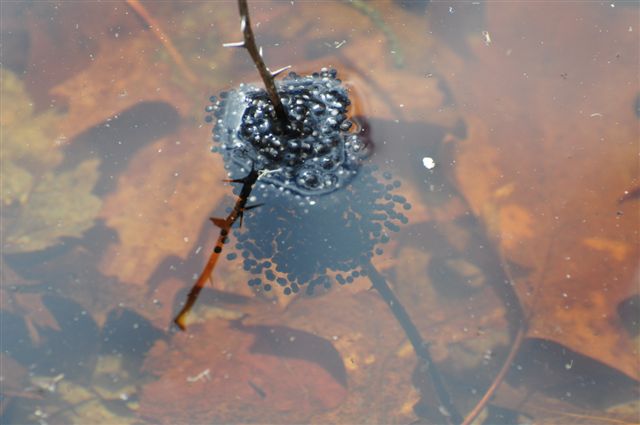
Frog eggs in the Kettle Pond vernal pool at Ninigret National Wildlife Refuge, Rhode Island.